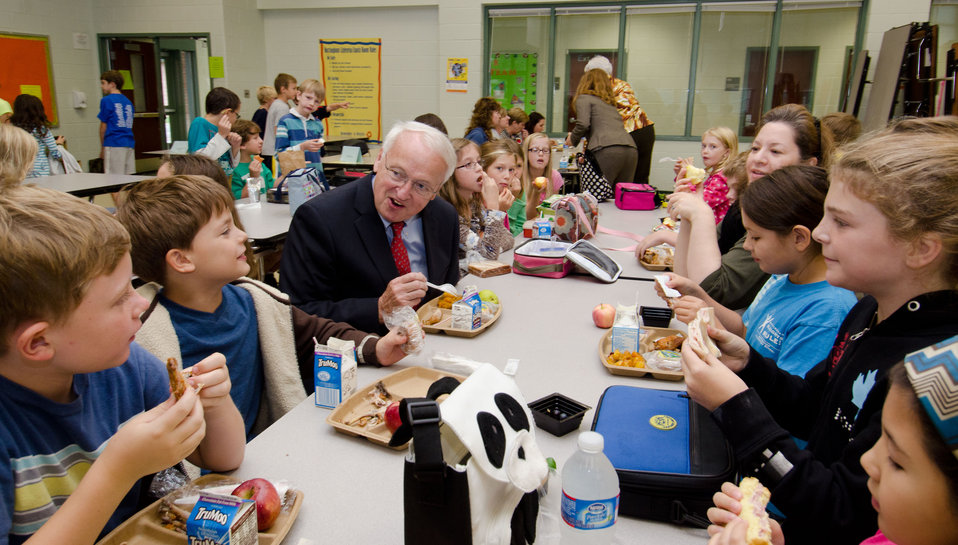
Under Secretary for Food, Nutrition and Consumer Services Kevin Concannon (red tie) spoke with his lunch mates during the school lunch program at Nottingham Elementary School in Arlington, VA, on Wednesday, October 12, 2011. Today's menu included roasted chicken, roasted butternut squash with dried cranberries, farm fresh mixed lettuce salad, turkey wraps, pita wedges, hot muffins, carrots, pears and more choices.